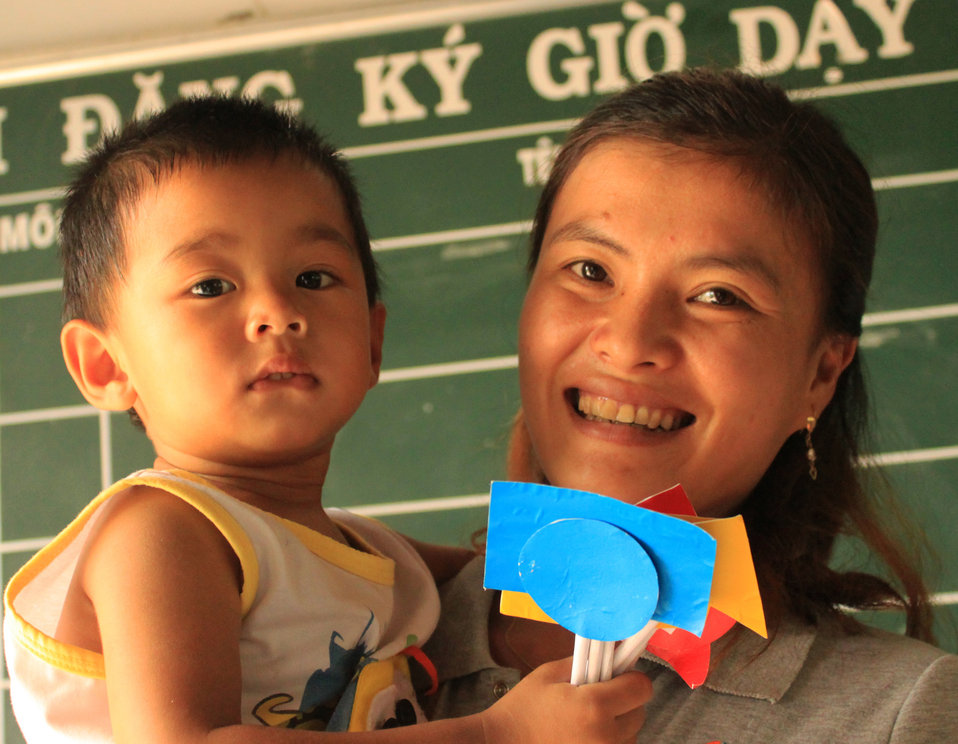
A child accompanies his mother, a teacher, who attends a USAID-funded intensive training course in Kon Ray Ethnic Minority Boarding School